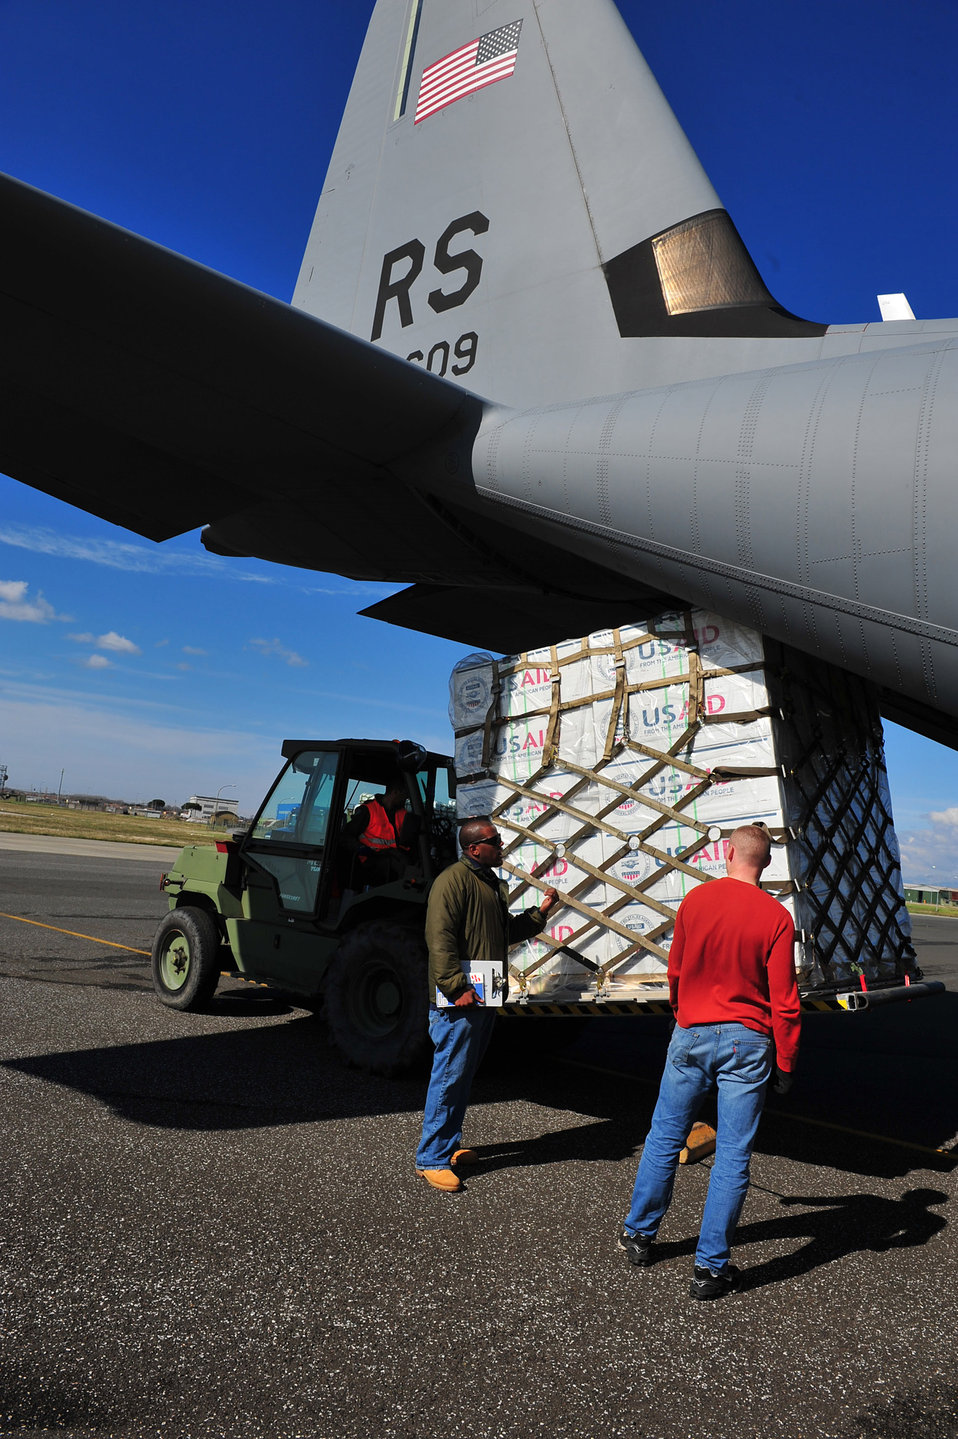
US Aid to Tunisia

March 4th 2011, U.S. Airmen from the 435th Air Mobility Squadron out of Ramstein Air Base load blankets, tarps and water containers onto C-130 aircraft in Pisa, Italy. These aircraft will then fly these supplies to Tunisia. The U.S. Government is working intensely with the International community to meet the humanitarian needs of the Lybian people and others in the country who fled across the borders. U.S. Army Photo by Staff Sgt. Brendan Stephens. Approved for Public Release